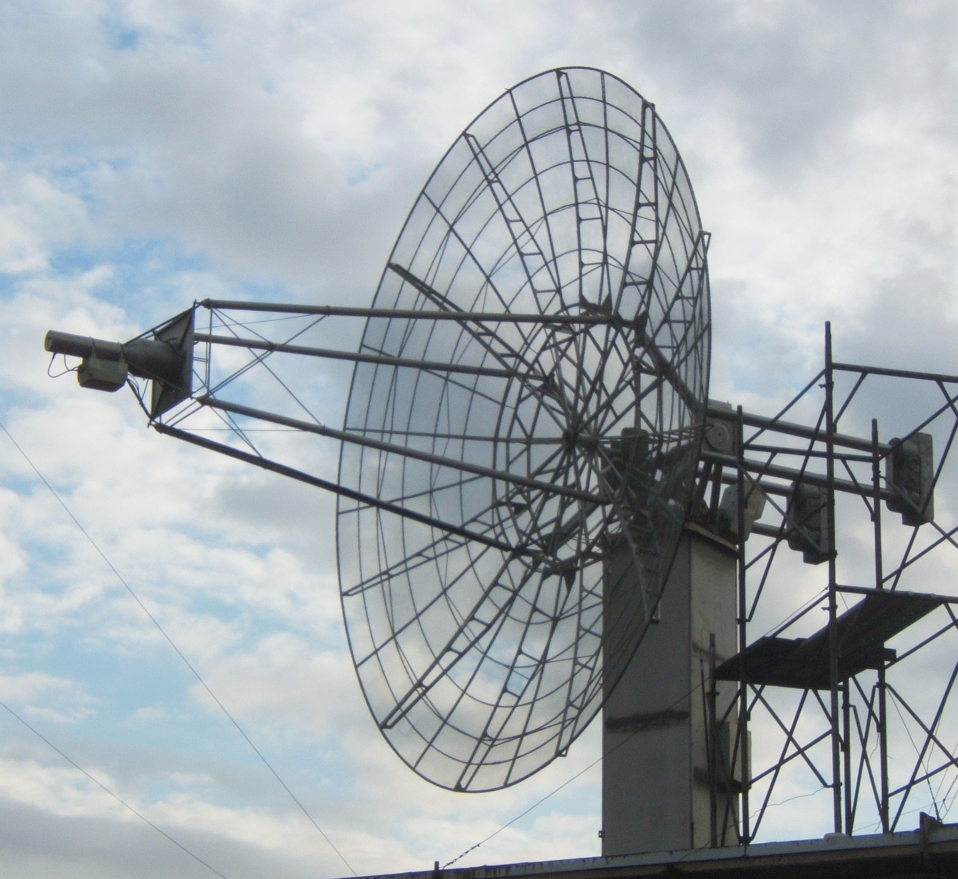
Antenna for EME ('moonbounce') communications on UHF amateur radio bands. Built and operated by Salvatore Gerloni I2FZX (SK), Milano, Italy. Parabolic reflector diameter is 6m.